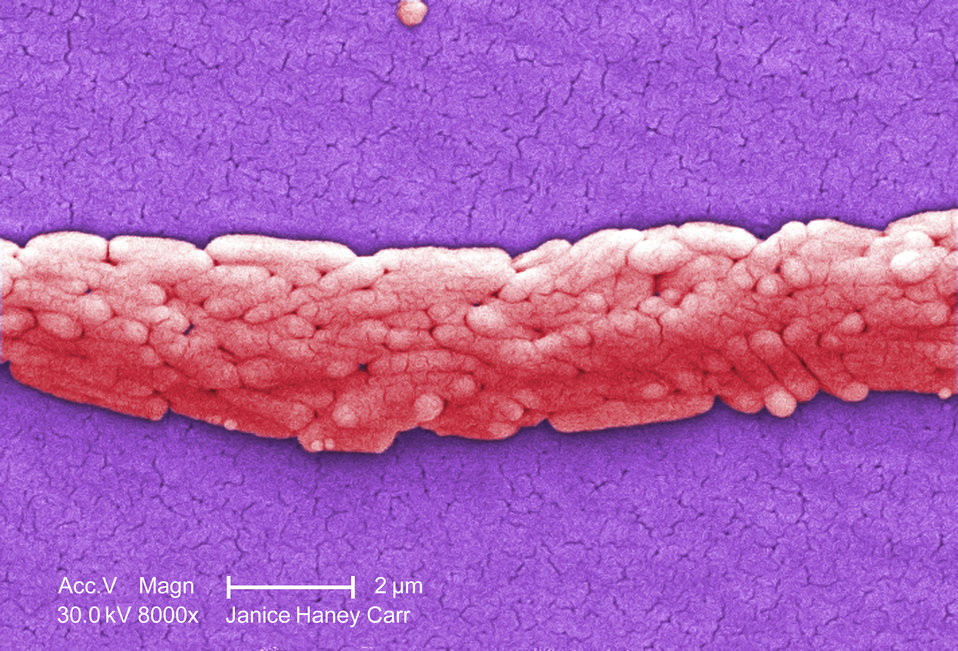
Under a moderately-high magnification of 8000X, this colorized scanning electron micrograph (SEM) revealed the presence of a grouping of Gram-negative Salmonella typhimurium bacteria that had been isolated from a pure culture.